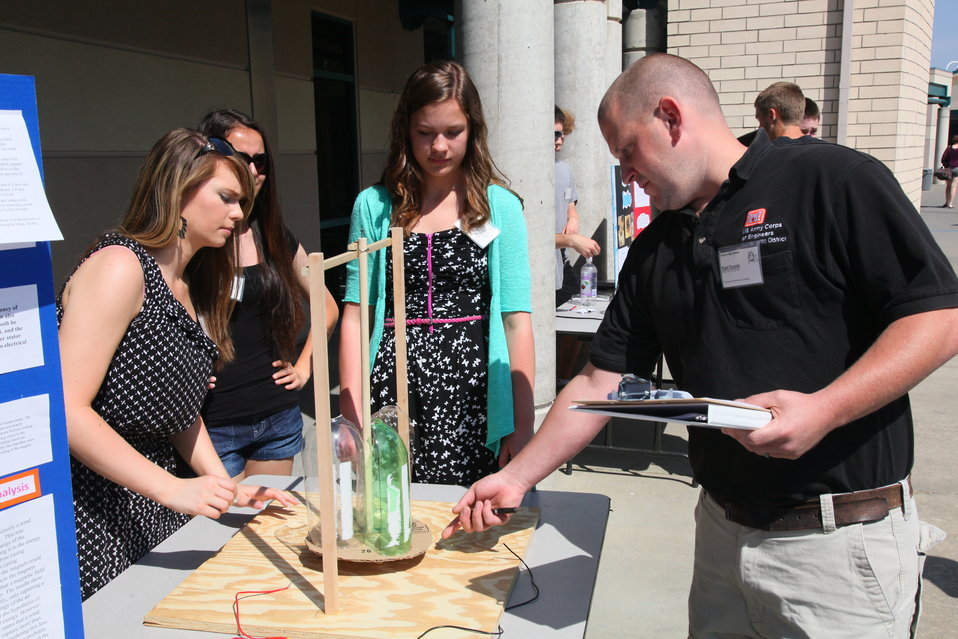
Corps of Engineers judge science projects at the 5th Annual Folsom High School Physics and Engineering Challenge.

Electrical engineer Ryan Puryear (right) poses questions to Folsom High students about their physics project on wind turbines during the 5th Annual Folsom High School Physics and Engineering Challenge in Folsom, Calif., May 18. Puryear was one of two judges from the U.S. Army Corps of Engineers Sacramento District’s engineering division that participated in the event. The students displayed various rocket, solar, hover, catapult, air compression, electric, magnetic and light-bending projects with detailed narratives of their experience for the judges.